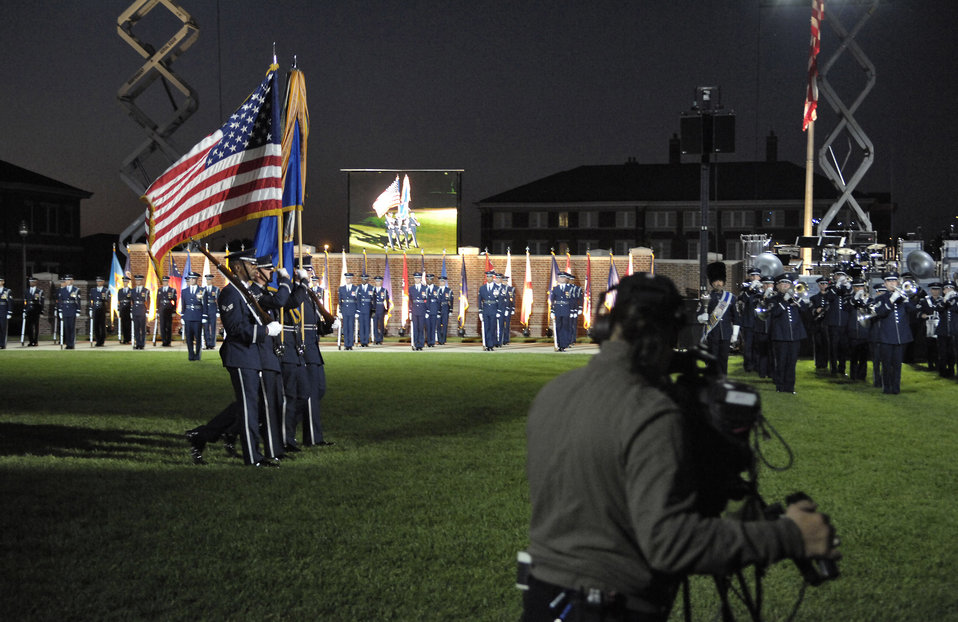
Air Force Tattoo

The Air Force Honor Guard colors team prepares to present the colors to a crowd of distinguished guests Sept. 23 at Bolling Air Force Base, D.C. The 2007 Air Force Tattoo, titled